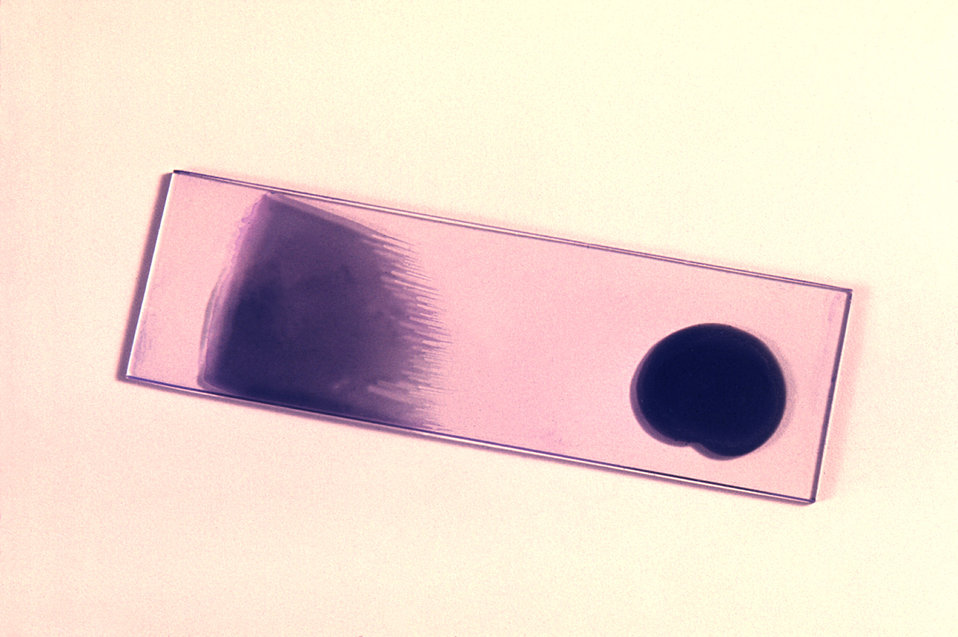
Here, alcohol accidentally fixed the thick film portion of this Giemsa stained slide producing an unfavorable result.